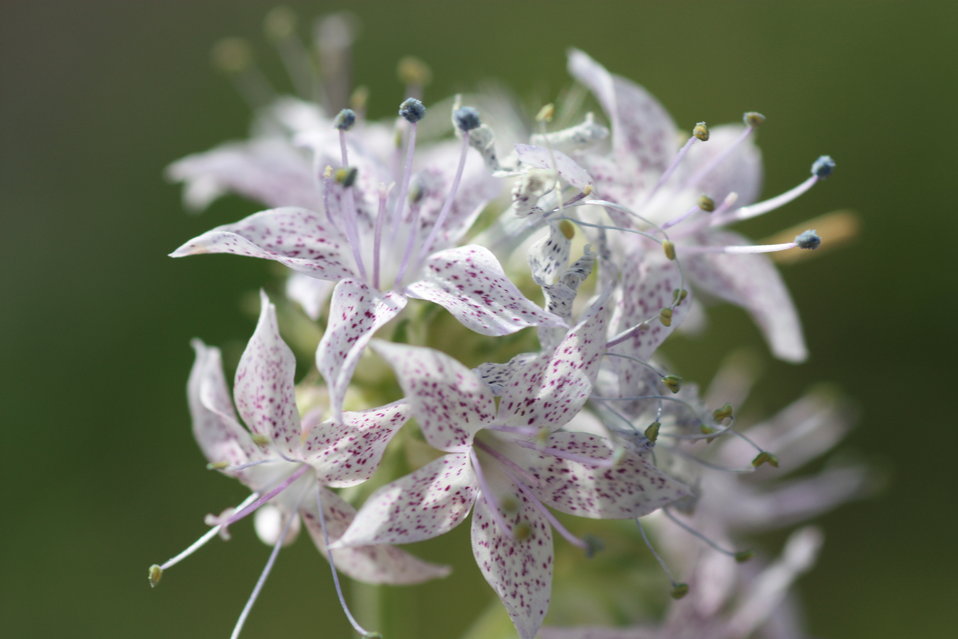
Pagosa Skyrocket

The Pagosa skyrocket’s dense clusters of white colored flowers with pink or purple spots make it an appealing flower for humans and pollinators alike.

Photo credit: USFWS

...........................................................................

BACKGROUND:

Pagosa skyrocket (Ipomopsis polyantha) is an extremely rare plant endemic to two populations on Mancos shale outcrops in and around the Town of Pagosa Springs in Archuleta County, Colorado. This member of the phlox family (Polemoniaceae) grows as a rosette for one to many years; then flowers, produces seeds, and dies in its final year of life. In June and July when the species is flowering, numerous bees and other insects can be seen visiting its clusters of white flowers with small purple spots. These pollinators are essential to the survival of the species and are comprised primarily of native ground-dwelling solitary bees. Pagosa skyrocket habitat is unique, being comprised of barren shales where conditions are harsh and difficult for growth.

The species was discovered in 1899 by Charles Fuller Baker, an American naturalist, and described as a new species in 1904 by the well-known botanist Axel Rydberg. No comprehensive surveys were conducted until the mid-1980s, when it became a candidate for listing under the Endangered Species Act. Today the Pagosa skyrocket is threatened by commercial, residential, and agricultural property development; the associated new utility installations and access roads; and from the potential effects of climate change. Because of Pagosa skyrocket’s limited range, the fact that there are only two populations, its small population size, and numerous threats to the species, it was proposed for Endangered Species Act protection in 2010. A final listing is expected in 2011.

Eighty-eight percent of the areas where Pagosa skyrocket are found are private lands. The Endangered Species Act does not protect plants on private lands and therefore, all conservation actions on private land are voluntary. Funding is available to landowners wanting to conserve the species. Please contact Gina Glenne or Ellen Mayo at 970-243-2778 for further information on this species and ways that you can help with conservation and recovery.